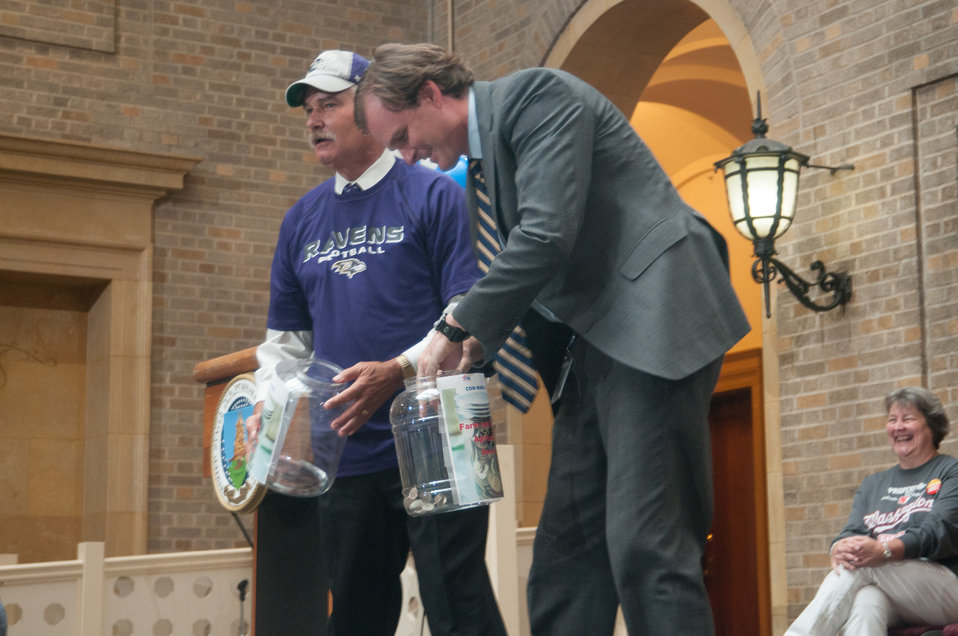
The 2013 Combined Federal Campaign Opening Ceremony and fund raising event on Tuesday, Sept 17, 2013 in the Whitten Building, U.S. Department of Agriculture (USDA), Washington, D.C. Employees took personal time to attend and participate in fund raising activities that generated donations and donation registrations that will help support charities. The Combined Federal Campaign (CFC) is the largest and most successful workplace charitable giving drive in the world. CFC is the only authorized charitable organization solicitation of Federal employees in their workplaces. CFC is structured to support and to promote philanthropy through a voluntary program that is cost-efficient and effective in providing all Federal employees the opportunity to impact the CFC charitable interest of their choosing. For more information about CFC, please see www.usda.gov/wps/portal/usda/usdahome?navid=USDA CFC USDA Photo by Lance Cheung.